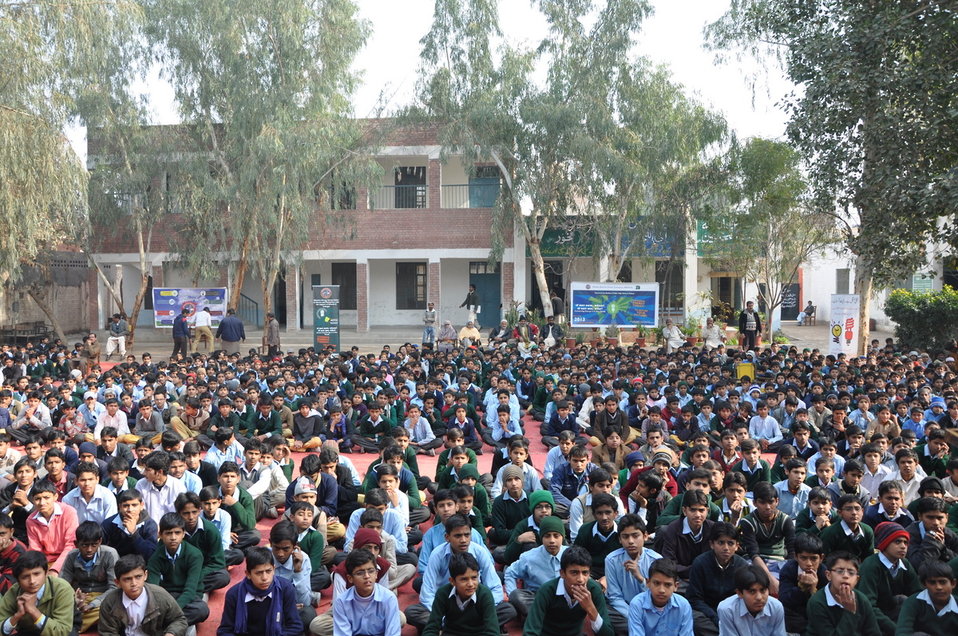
USAID Power Distribution Program-Energy Conservation Seminar at Govt. Bukhari Public School for Boys, Multan.

Multan, January 12, 2013 - the USAID Power Distribution Program with the collaboration of MEPCO, held an Energy Conservation Seminar at Govt. Bukhari Public School for Boys, Multan.
The purpose of the seminar was to:
• Inform students about the USAID Power Distribution Program and the role of Distribution companies in Pakistan.
• Educate students and teachers about the effective energy saving methods they can apply at homes, schools and workplaces.
More than 2000 students along with principal & teachers attended the seminar & participated actively in the quiz session